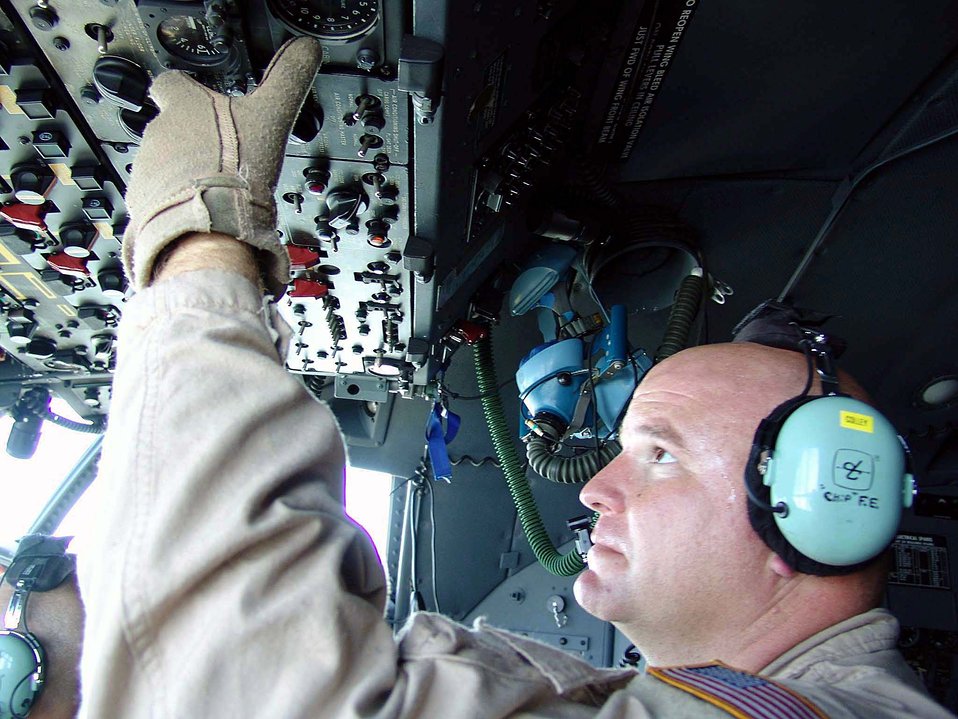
Gettin' ready

SOUTHWEST ASIA -- Staff Sgt. Chip Colley checks the pressurization panel during a flight into Iraq on Oct. 18. He is a flight engineer with the 746th Expeditionary Airlift Squadron at a forward-deployed location and is from the 41st Airlift Squadron at Pope Air Force Base, N.C.